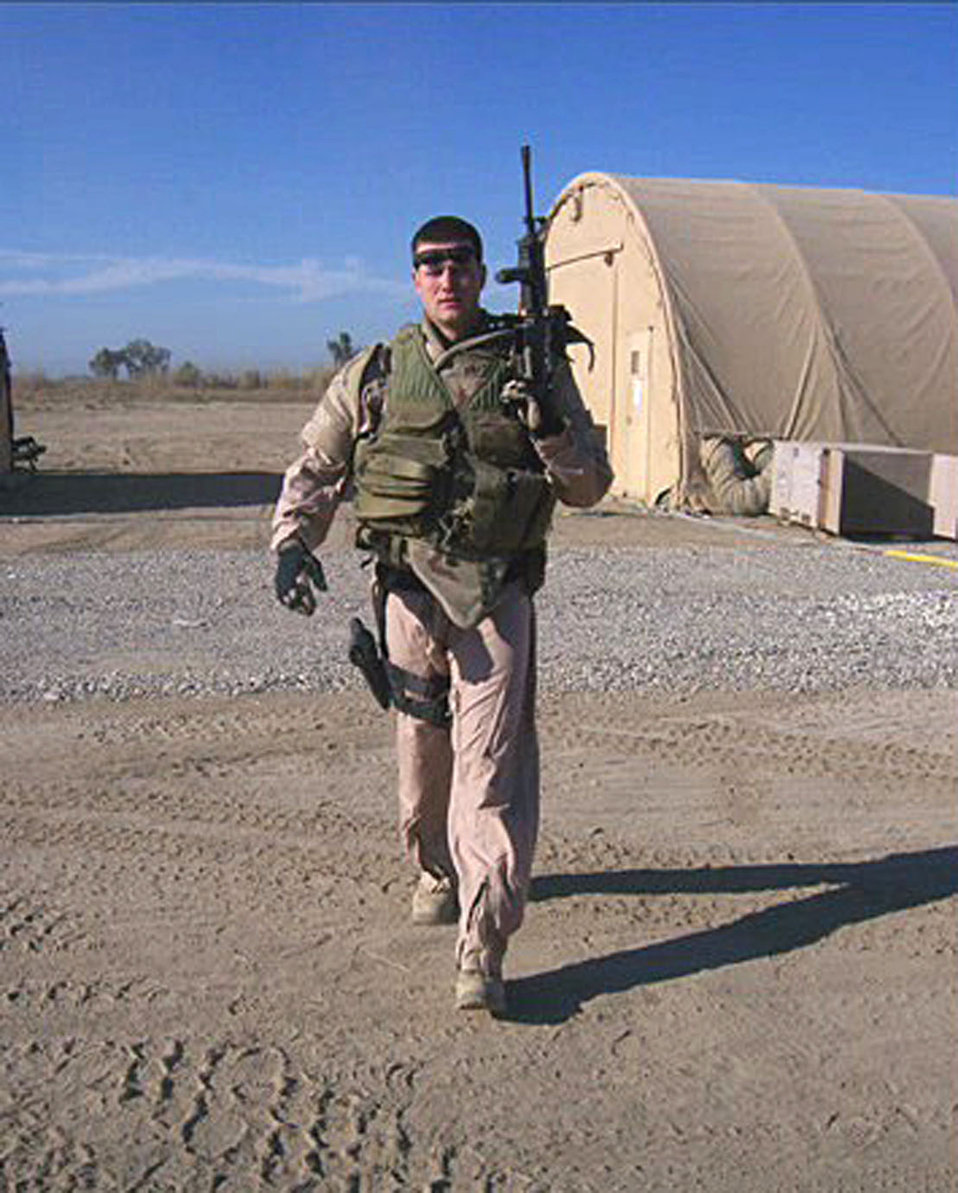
Hill mourns the loss of 3 Airmen

Senior Airman Daniel B. Miller Jr. was an explosive ordnance disposal Airman serving in Iraq and was killed defusing a car bomb when it detonated Jan. 7. He was deployed from the 775th Civil Engineer Squadron at Hill Air Force Base, Utah.